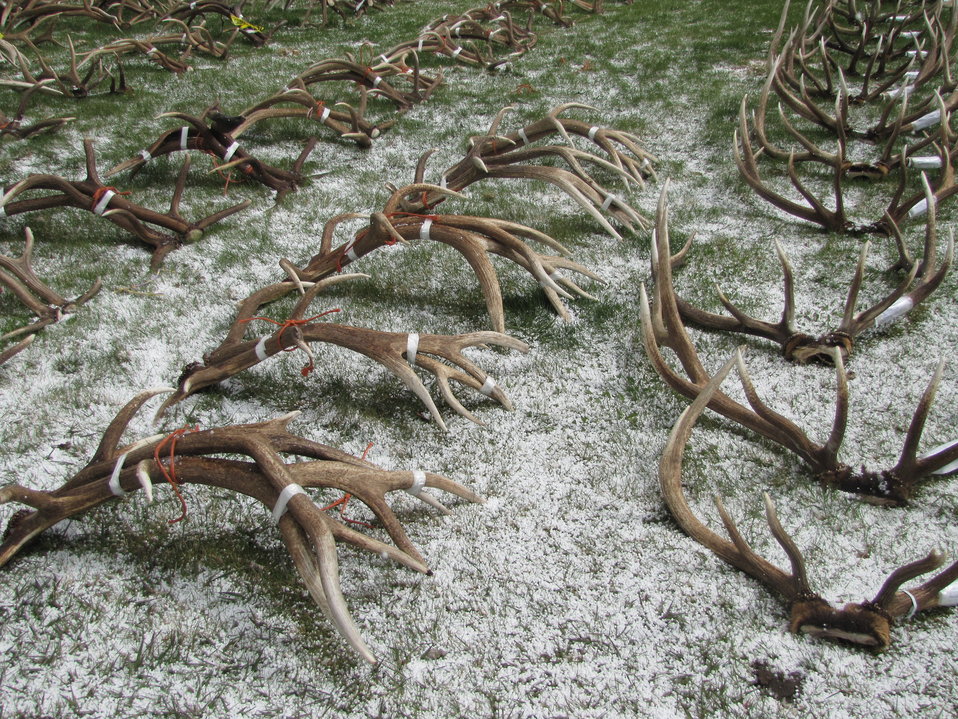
Matched pairs are laid out on the lawn and bundled as sets. May weather is unpredictable in Jackson. This year, snow, hail, and groppel made for a sporty day of antler sorting!